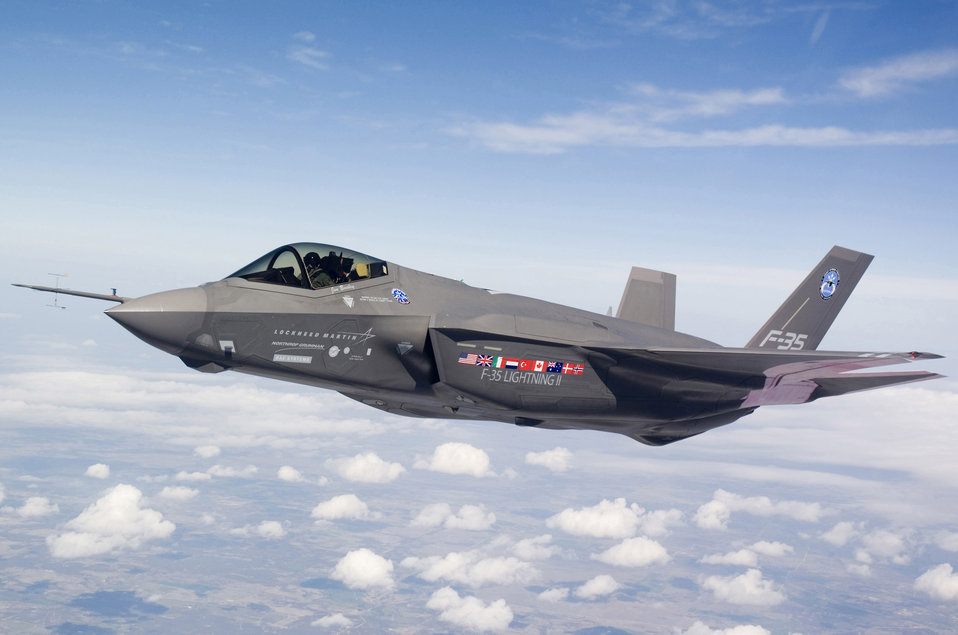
Lightning strikes twice

Over Fort Worth, Texas, an F-35 Lightning II test aircraft AA-1 undergoes a flight check.